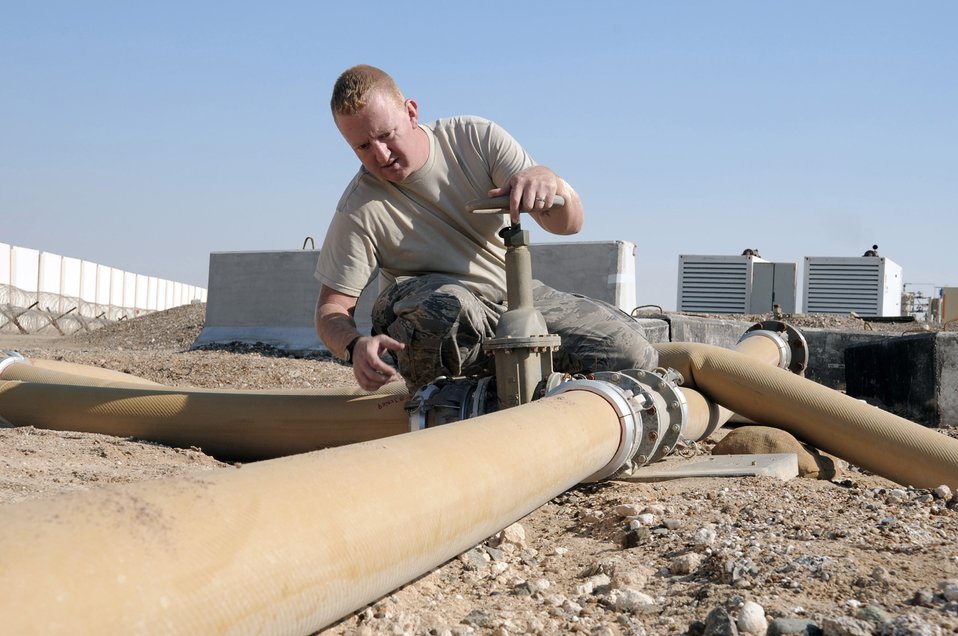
Airmen making a difference one gallon at a time

Staff Sgt. Garret Nichols checks a fuel pipeline connection during operations at the fuel bladder storage facility at a base in Southwest Asia Jan. 6, 2010. Sergeant Nichols is a fuels distribution craftsman with the 380th Expeditionary Logistics Readiness Squadron fuels management flight.